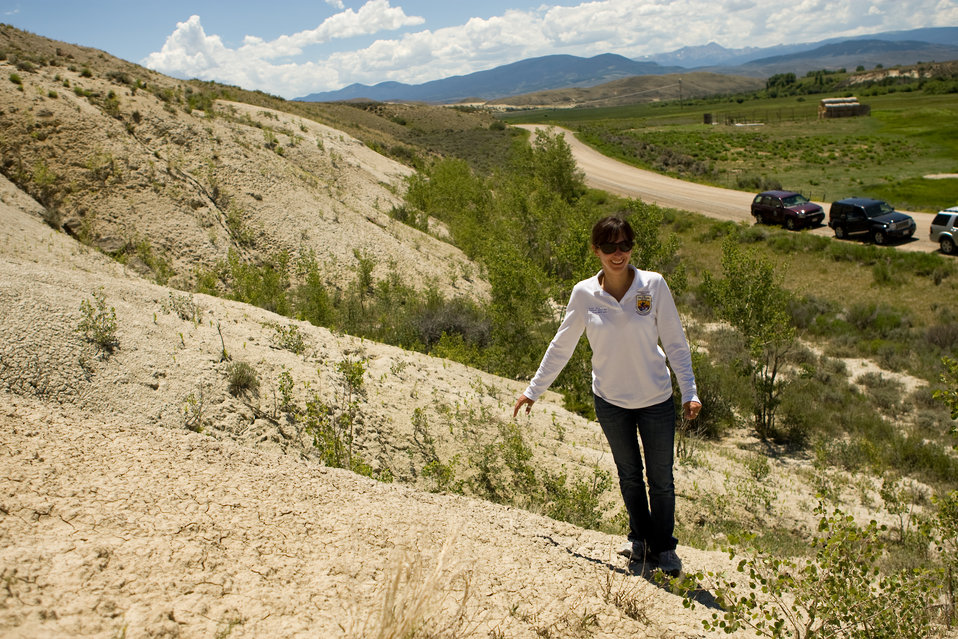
Colorado Rare Plant Conservation Initiative

The Colorado Rare Plant Conservation Initiative (RPCI) is a partnership of 23 statewide and regional agencies, private organizations, and academic institutions working to conserve 121 rare plants in Colorado. As part of these efforts the group developed the Colorado Rare Plant Conservation Strategy, developed Best Management Practices to reduce energy development impacts, addressed climate change, and developed focused strategies for the conservation of individual species at eight priority landscapes. The group has also worked to coordinate volunteer efforts for plant conservation across the state.